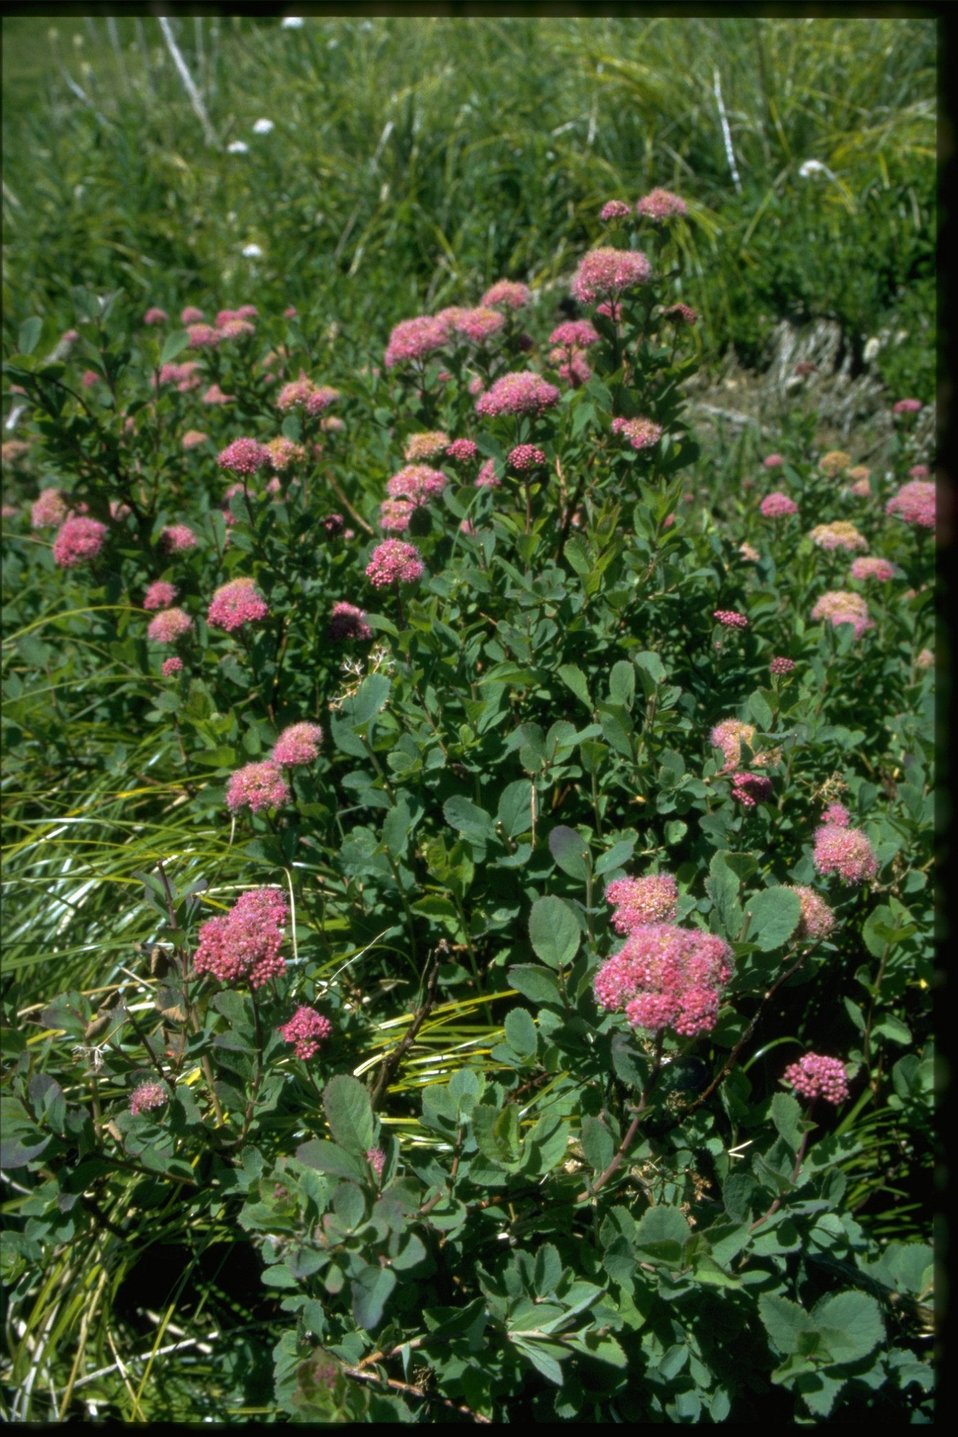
Medium shot of Spiraea densiflora.